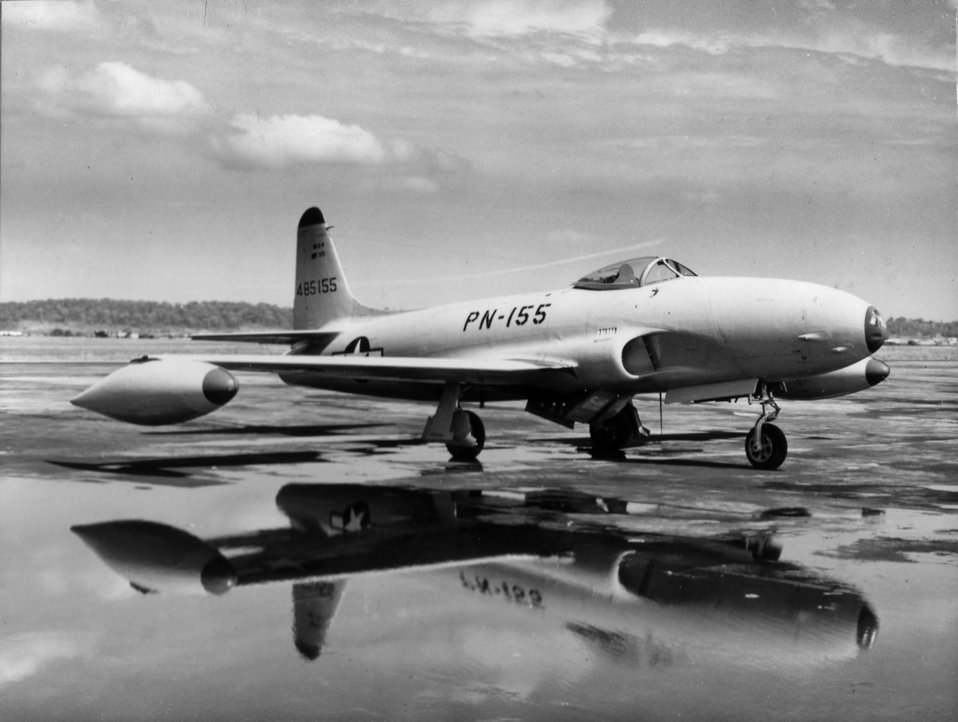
P-80

1940's -- P-80